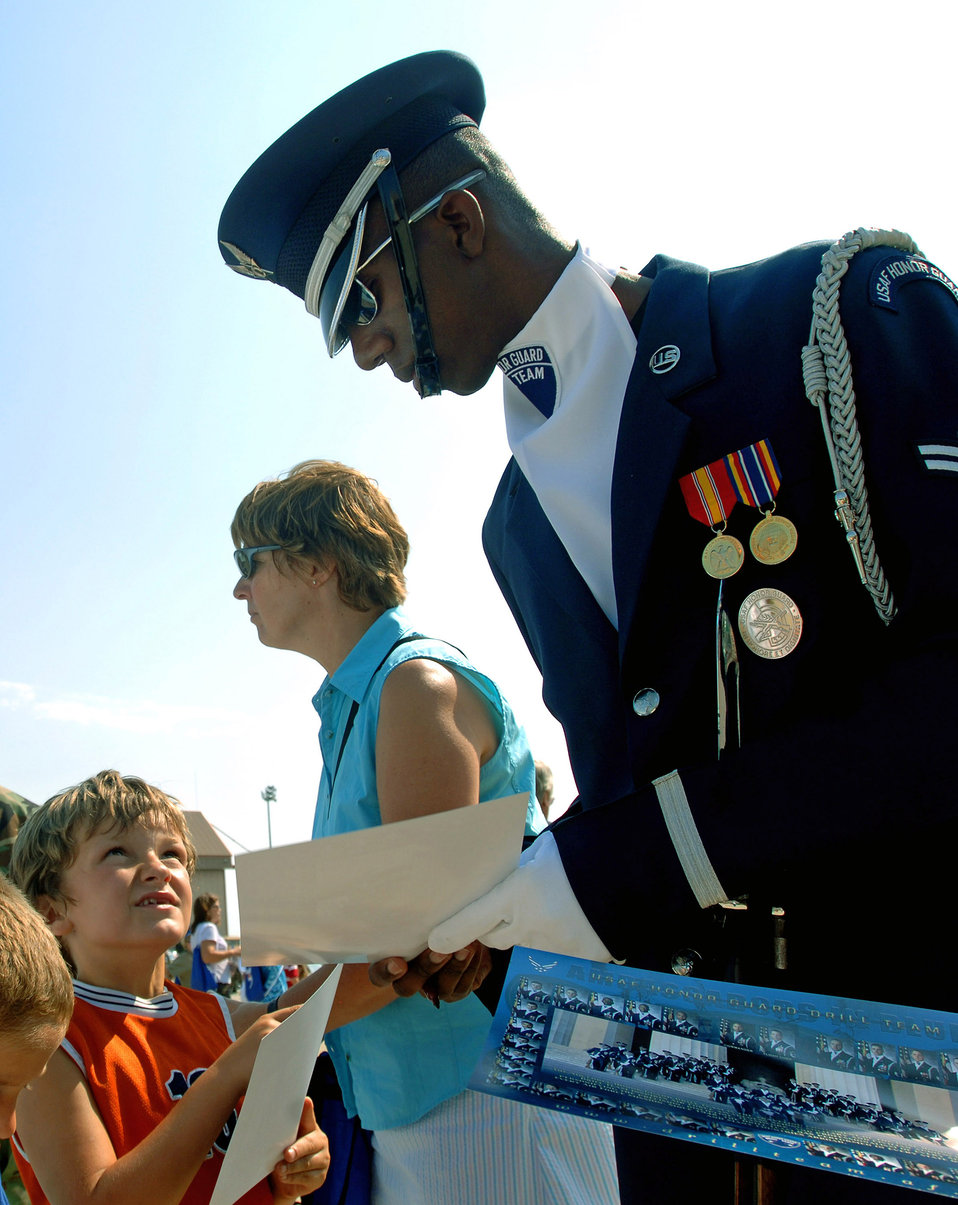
Pease Airmen provide a day to remember

Airman 1st Class Alexander Tonic of the U.S. Air Force Honor Guard Drill Team signs autographs after a performance for children with special needs Aug. 17 at Pease Air National Guard Base, N.H. The drill team's performance was part of the 2007 Wings of Hope Air Show at Pease in conjunction with Air Force Week New England.